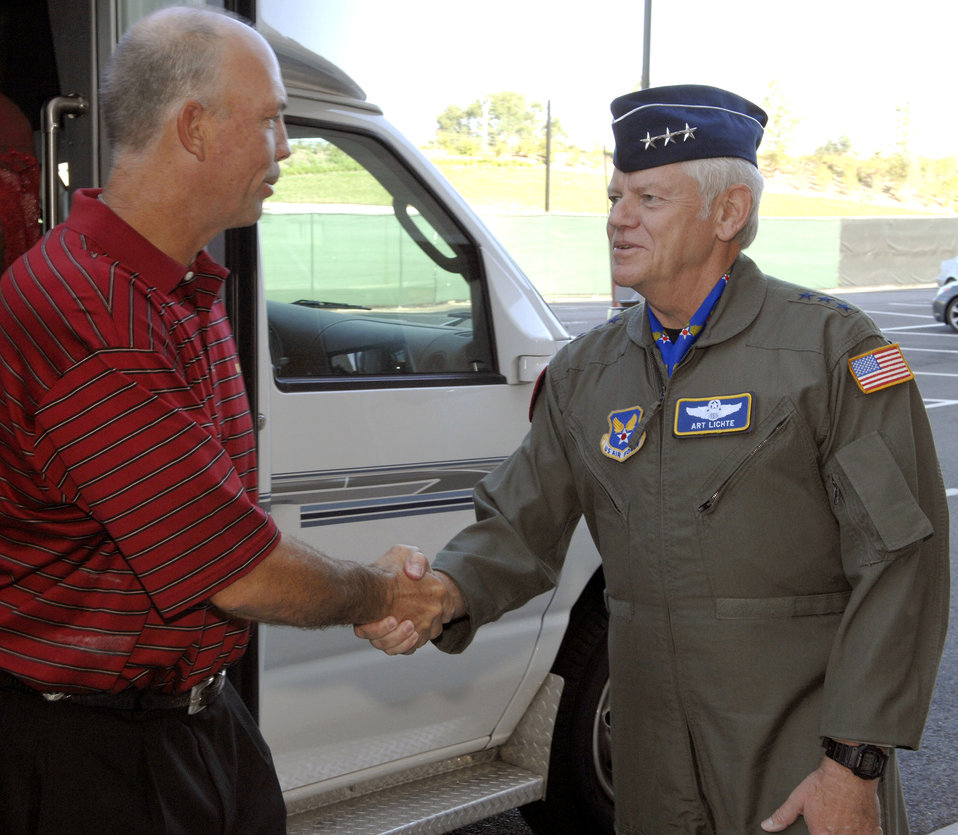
PGA champions visit Pentagon

U.S. Ryder Cup Captain Tom Lehman shakes hands with Lt. Gen. Arthur J. Lichte as he arrives at the Pentagon Sept. 17. General Lichte is the assistant vice chief of staff and director, Air Force staff, Headquarters U.S. Air Force.